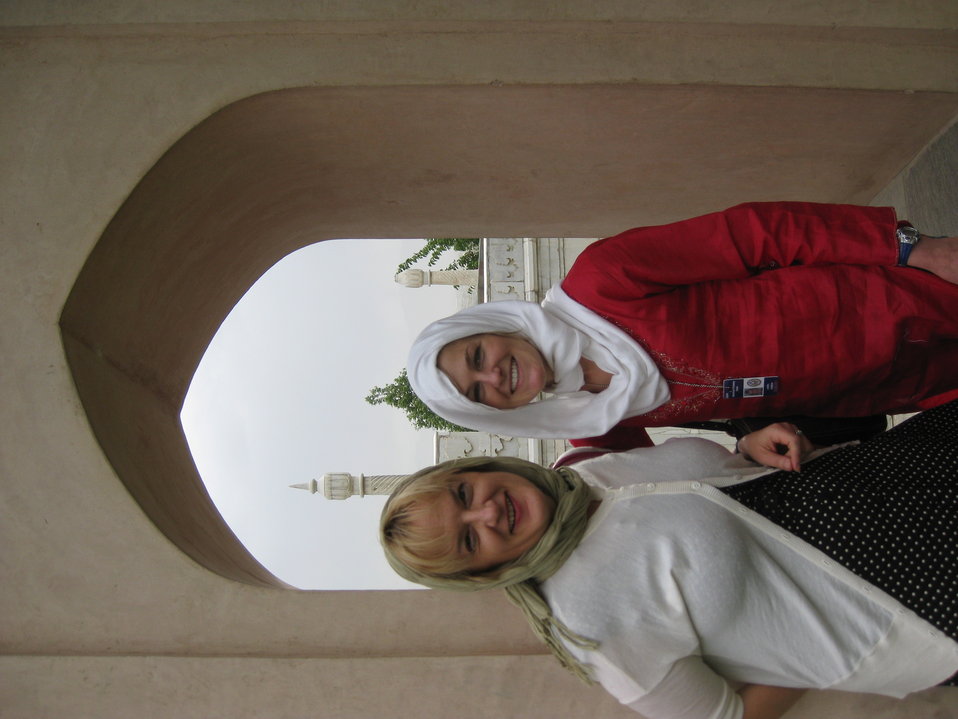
Afghan Youth Voices 097